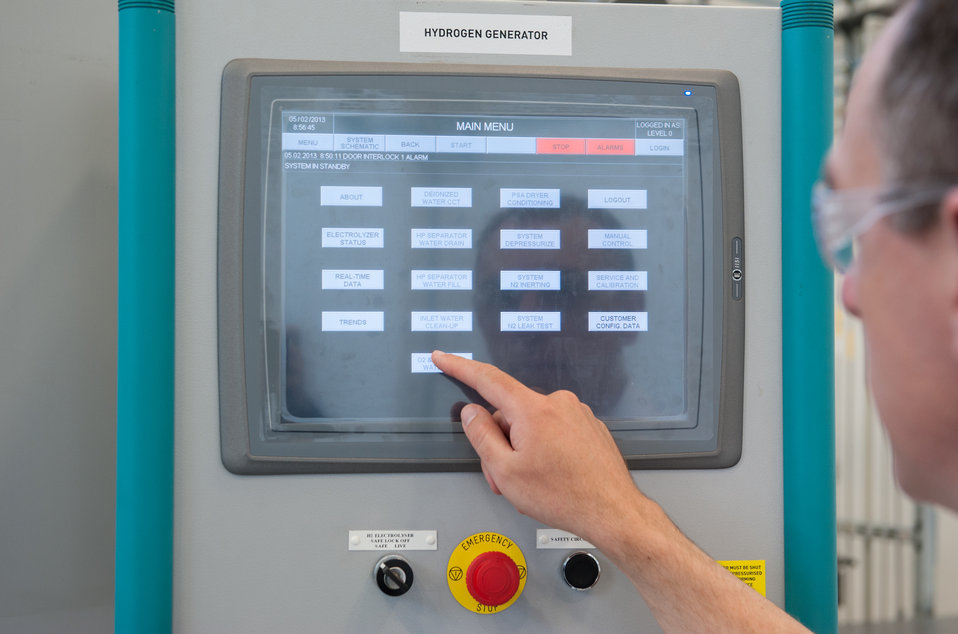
Energy Systems Integration Lab (ESIL) at the Energy Systems Integration Facility (ESIF)

May 02, 2013 - Chris Ainscough works on the hydrogen generator in the Energy Systems Integration Lab (ESIL) at the new Energy Systems Integration Facility (ESIF) at the National Renewable Energy Laboratory in Golden, Colorado.